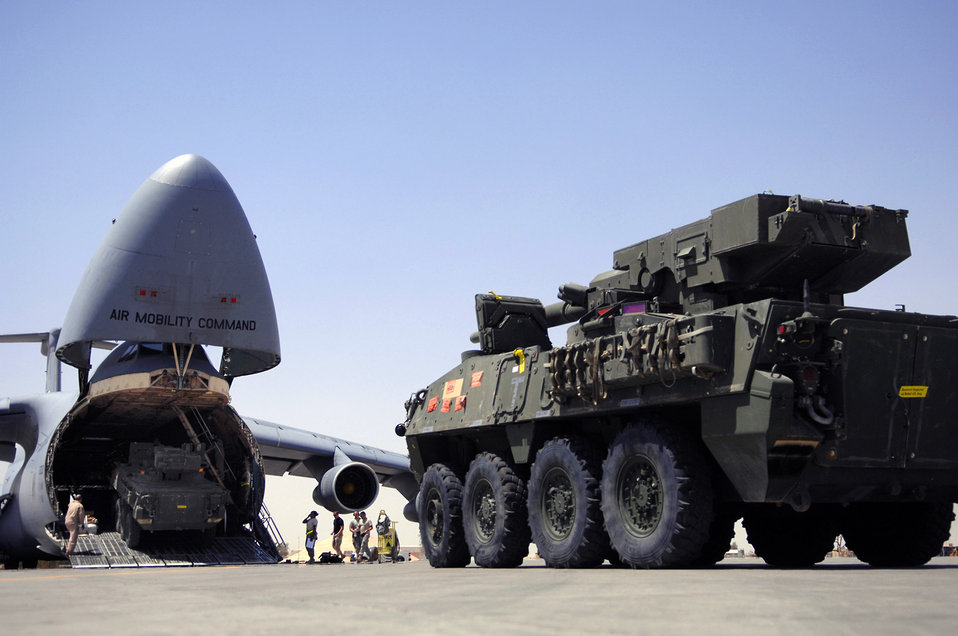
Open wide

Two Army Stryker Infantry Carrier Vehicles drive onto a C-5 Galaxy June 25 at Joint Base Balad, Iraq. The C-5 has a kneeling landing gear system that permits lowering of the parked aircraft so the cargo floor is at truck-bed height or to facilitate vehicle loading and unloading. The C-5 is from Dover Air Force Base, Del.